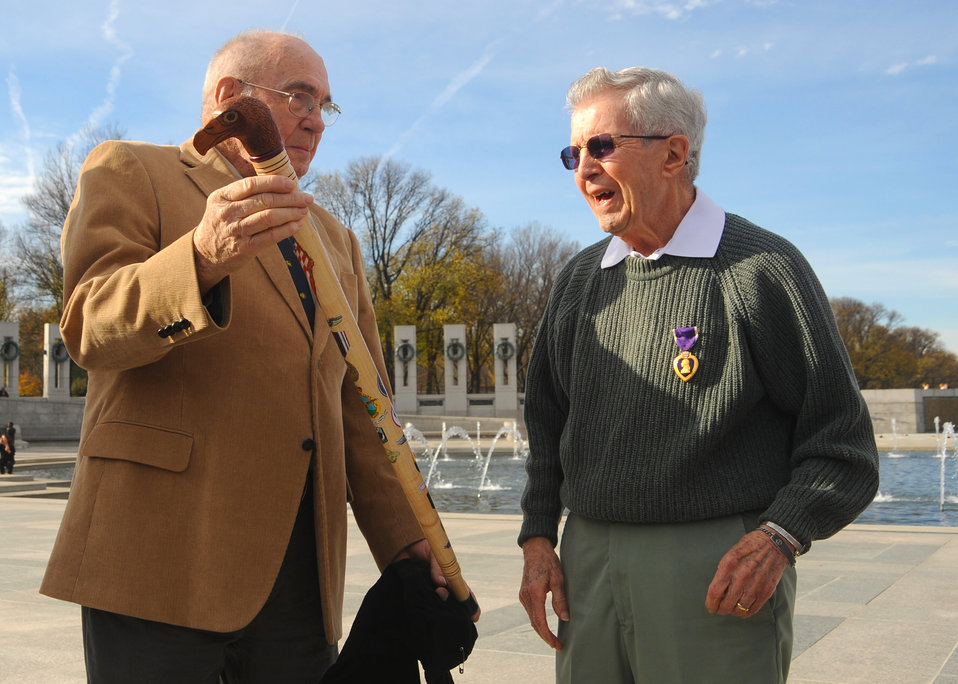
Moppert Purple Heart

Retired Master Sgt. Hank Cloutier presents former1st Lt. Edward Moppert with an Eagle Cane during Moppert’s Purple Heart medal ceremony Nov. 26, 2011, at the World War II Memorial in Washington. Moppert was wounded and held as a prisoner of war during World War II, and he was never presented with nor did his records reflect receiving the medal. The Eagle Cane is presented to veterans who have received some manner of leg disability from combat related actions.